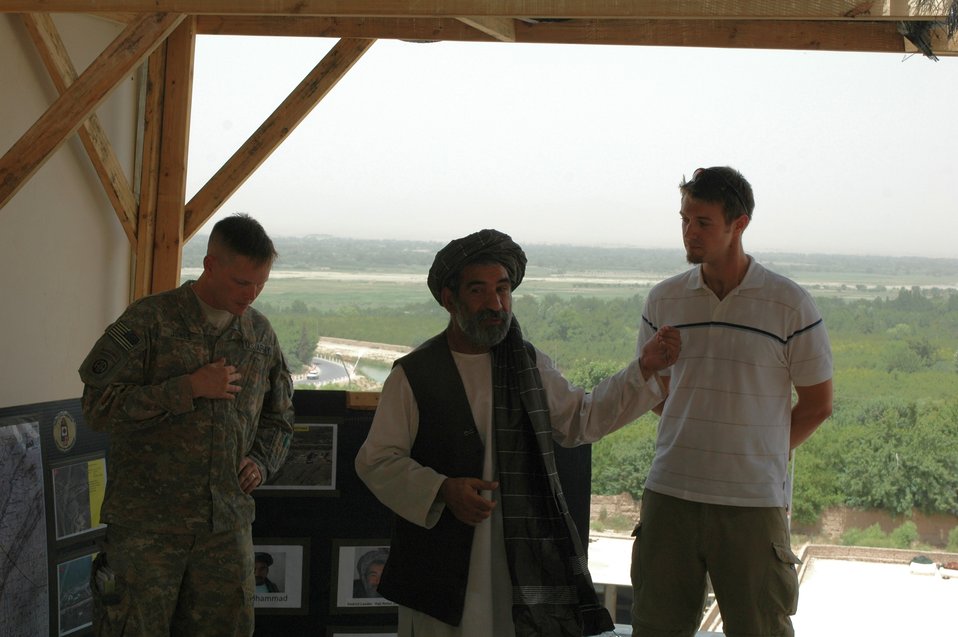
CODEL Berman